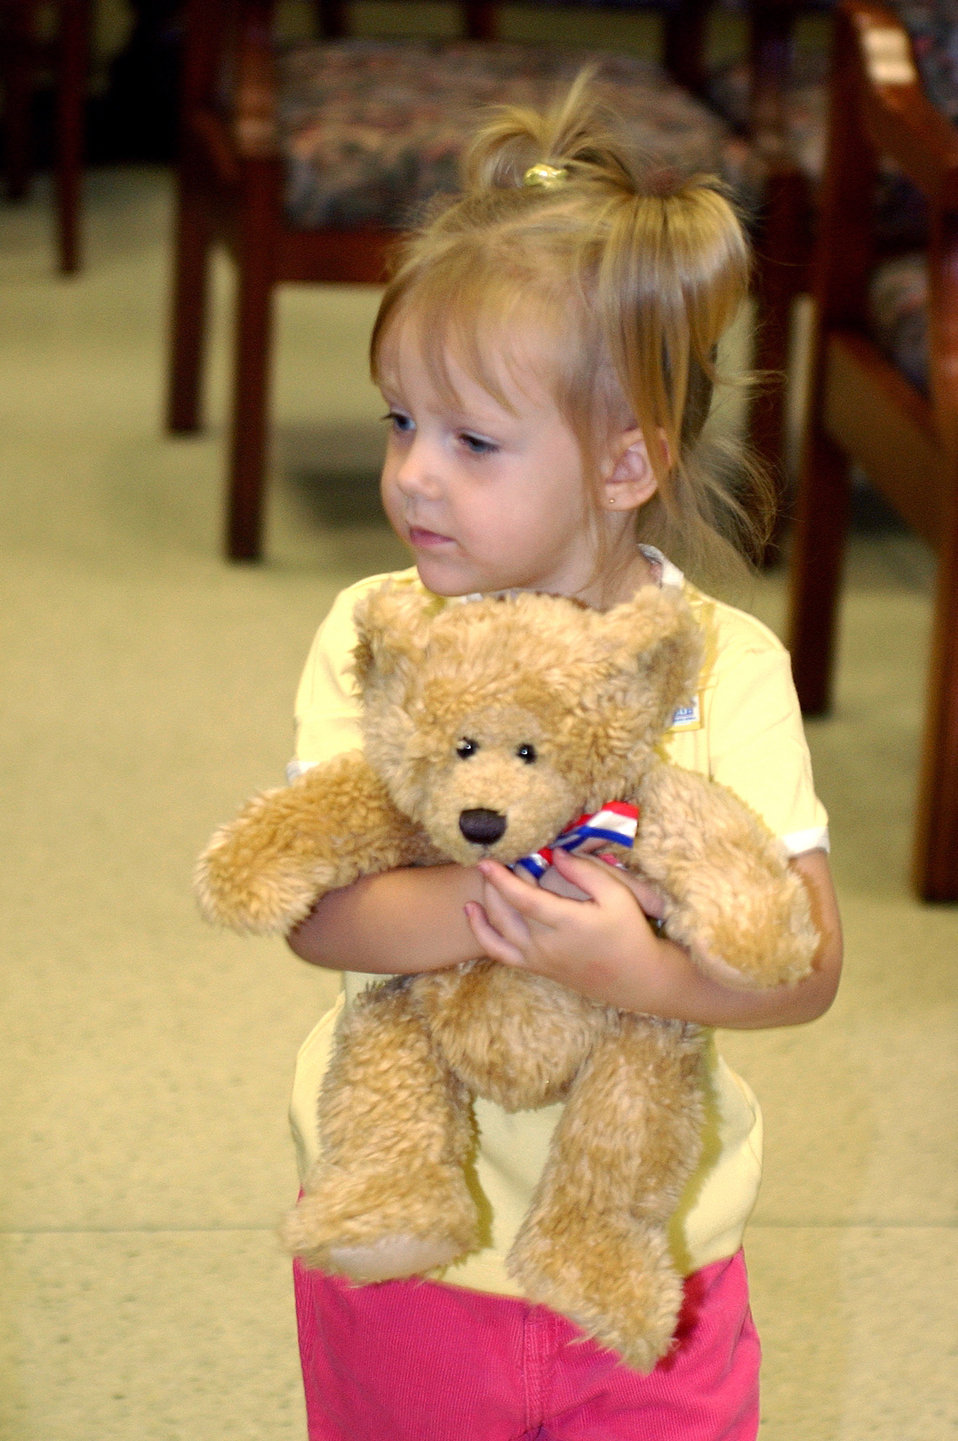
Pappa bear

MCCHORD AIR FORCE BASE, Wash. -- Hannah Treadway hugs her bear that she received from the USO Build-A-Bear program here recently. The program is for families who have deployed members. Hannah's father Tech. Sgt. Tim Treadway is deployed and is assigned to the 62nd Operation Support Squadron.